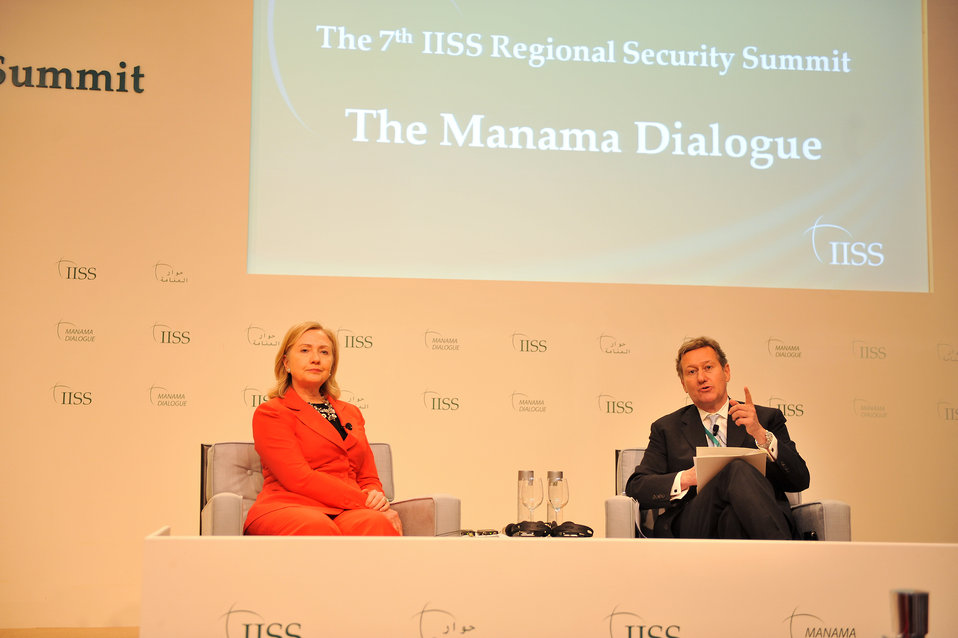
Secretary Clinton Attends the Opening Dinner

U.S. Secretary of State Hillary Rodham Clinton attends the opening dinner of the Seventh IISS Regional Security Summit Manama Dialogue in Bahrain, December 4, 2010.